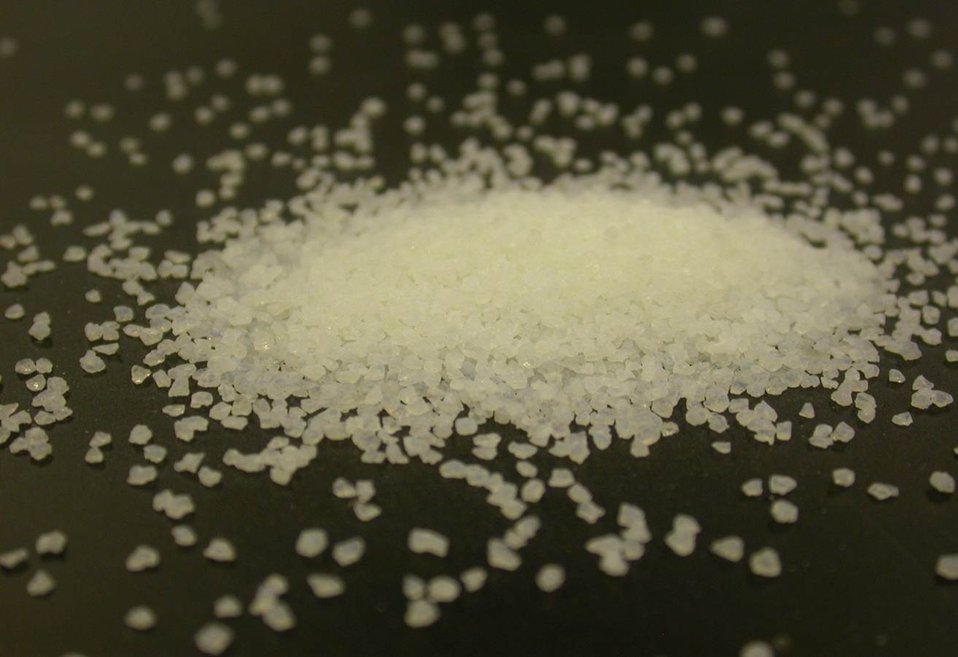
Technologies to facilitate environmental clean-up.

Self-assembled monolayers on mesoporous supports (SAMMS) materials, at PNNL originally designed to remove chemical and nuclear contaminants from liquid solutions, has now been tailored to absorb carbon dioxide from breathing air submarines.